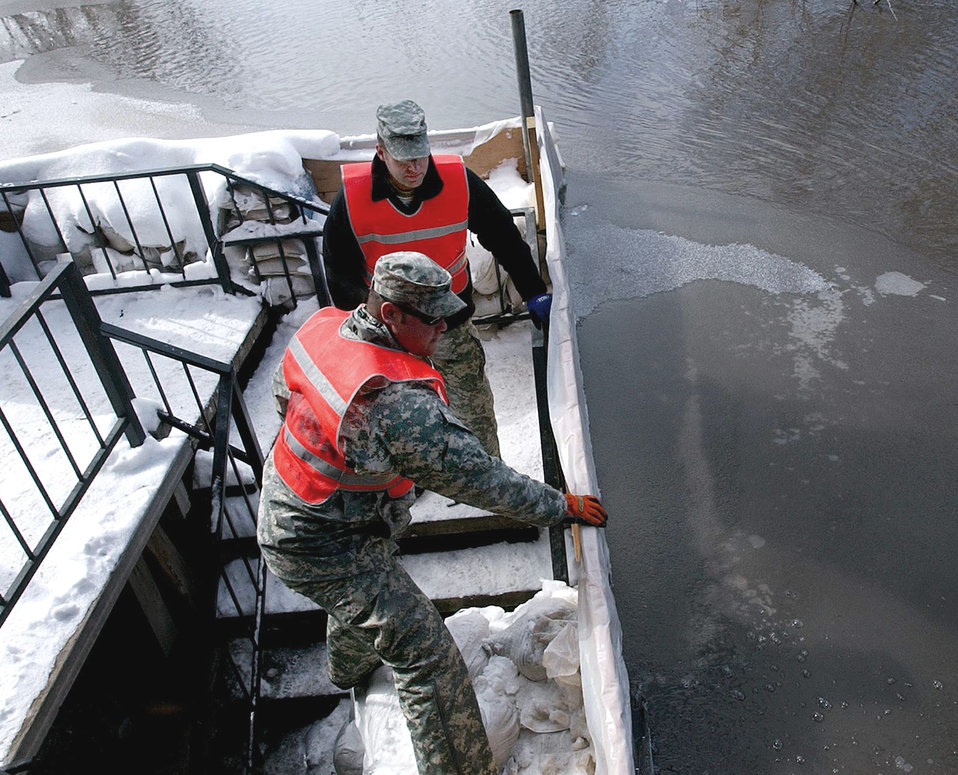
6 states send troops to flood duty in North Dakota

Soldiers check on flooding in a residential area along the Red River March 26 in Moorhead, Minn. As of March 30, governors in six upper Midwestern states have sent more than 2,400 National Guard members and equipment to help fight flooding in the area. The Soldiers are from Company A, 2nd Combined Arms Battalion, 136th Infantry Regiment.